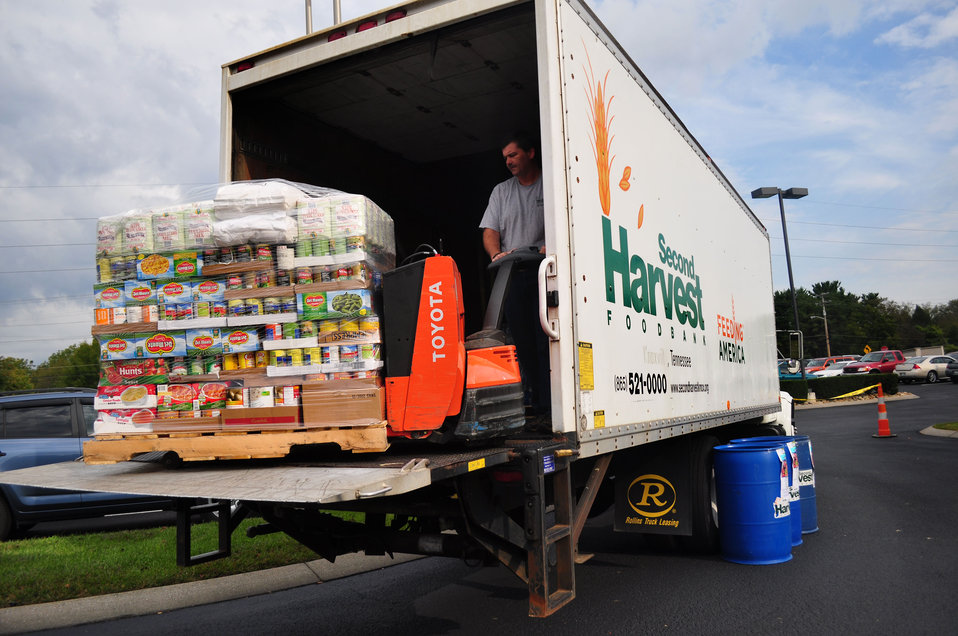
Second Harvest Feds Feed Families Oak Ridge

DOE photo by Lynn Freeny
9/27/2012 Oak Ridge Tennessee
DOE's 2012 Feds Feed Families campaign collected more than 11,400 pounds for the Second Harvest Food Bank of East Tennessee.